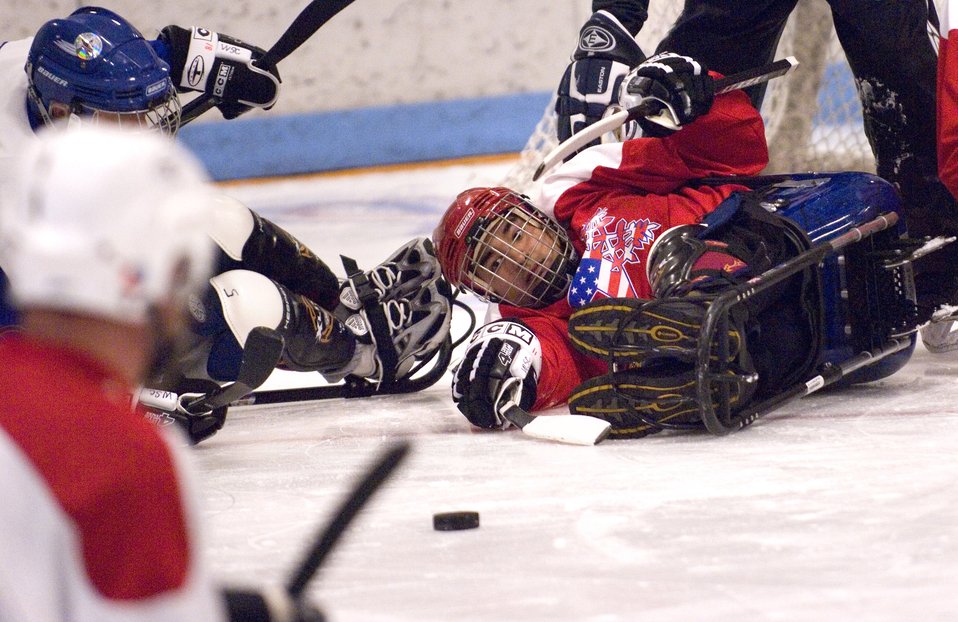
Winter sports clinic helps veterans

Disabled Marine Corp veteran, Gregory Rodriguez, stops a puck against the blue team at a sled hockey game during the 22nd National Disabled Veterans Winter Sports Clinic held at the Snowmass Village, Colo., April 2. The annual disabled learn-to-ski clinic helps motivate and rehabilitate disabled Department of Defense veterans. It is the largest of its kind in the world. The clinic instructs veterans on Alpine and Nordic skiing, rock climbing, snowmobiling, sled hockey, and more.